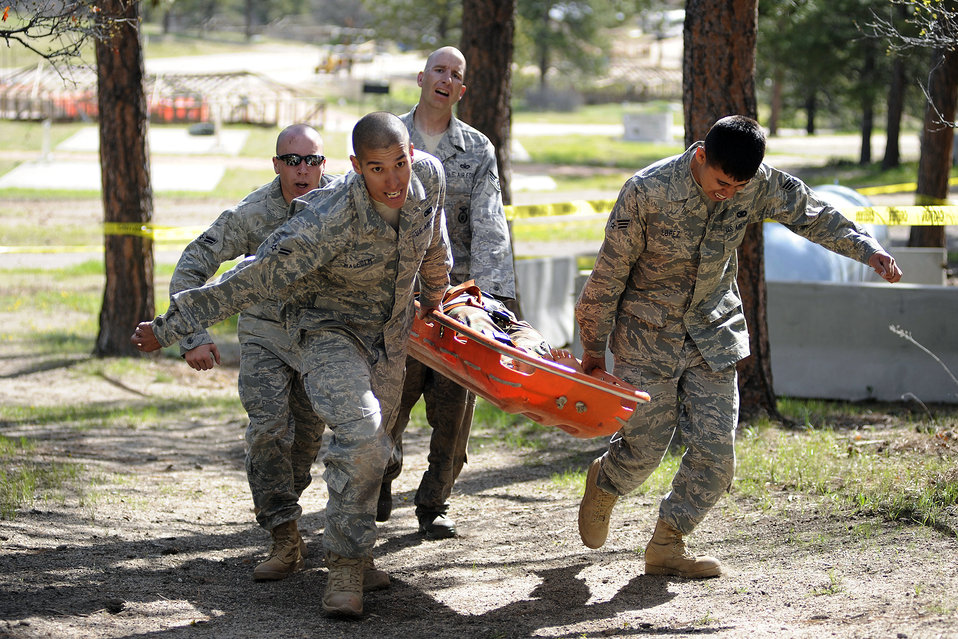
Security Forces Guardian Challenge

The 50th Space Wing's Guardian Challenge Security Forces team, composed of Airmen 1st Class Eric Sauls and Warren Malcolm III, Staff Sgt. Andrew Lewis, and Senior Airman Alberto Lopez, carry a litter to the finish line at the U.S. Air Force Academy's obstacle course May 18, 2010, in Colorado Springs, Colo. Guardian Challenge is Air Force Space Command's premier bi-annual competition to determine the best units within the command.